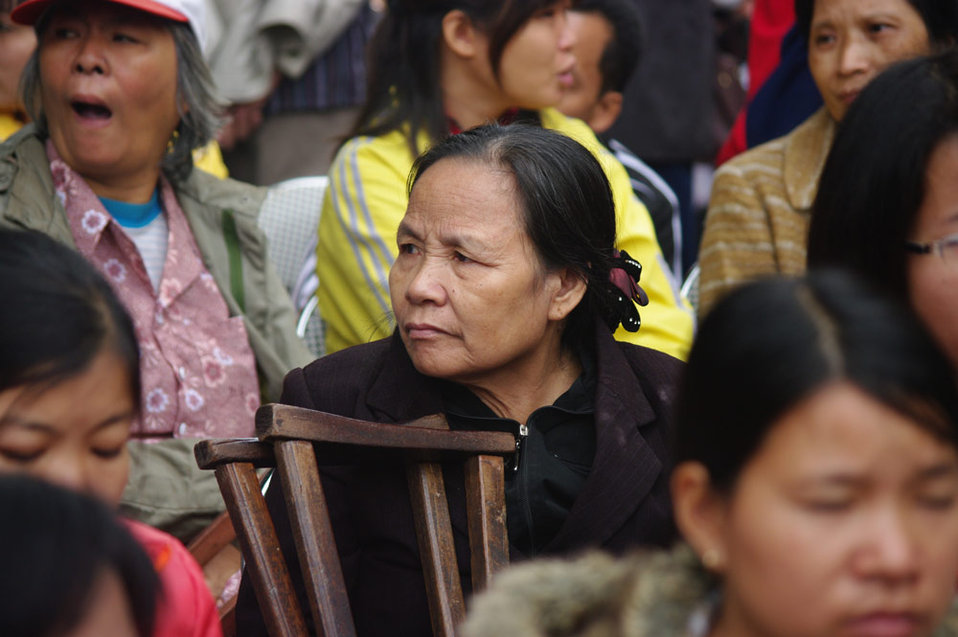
International Day of Persons with Disabilities 2010